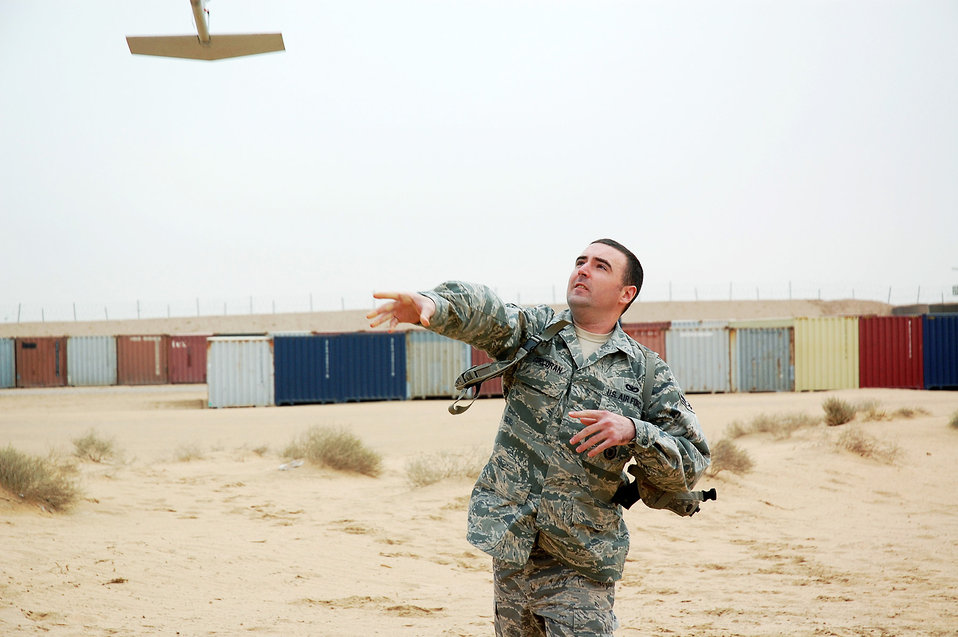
AF Raven B operators maintain 'eyes-on' for ground forces

Airman 1st Class Shane Corcoran launches an RQ-11B unmanned aircraft system from Camp Bucca's Burge Field in Iraq Feb. 25. Requiring neither runway nor launcher, the Raven B is ideal for tactical-level intelligence, surveillance and reconnaissance missions. Everything needed to operate the system can fit into a rucksack, and the UAS itself can be launched by hand or from a vehicle. Airman Corcoran is an 887th Expeditionary Security Forces Squadron Raven B operator.